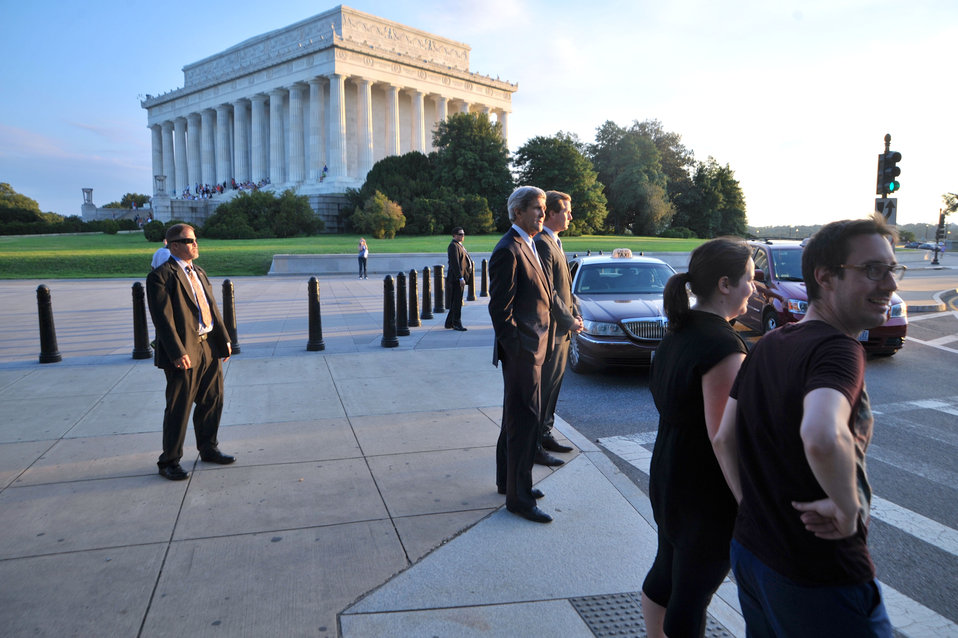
Secretary Kerry Enjoys a Walk by the Lincoln Memorial

U.S. Secretary of State John Kerry, joined by Senior Aide Jason Meininger, waits with tourists for a stoplight to change during a twilight walk around the Lincoln Memorial in Washington, D.C., on July 24, 2013.